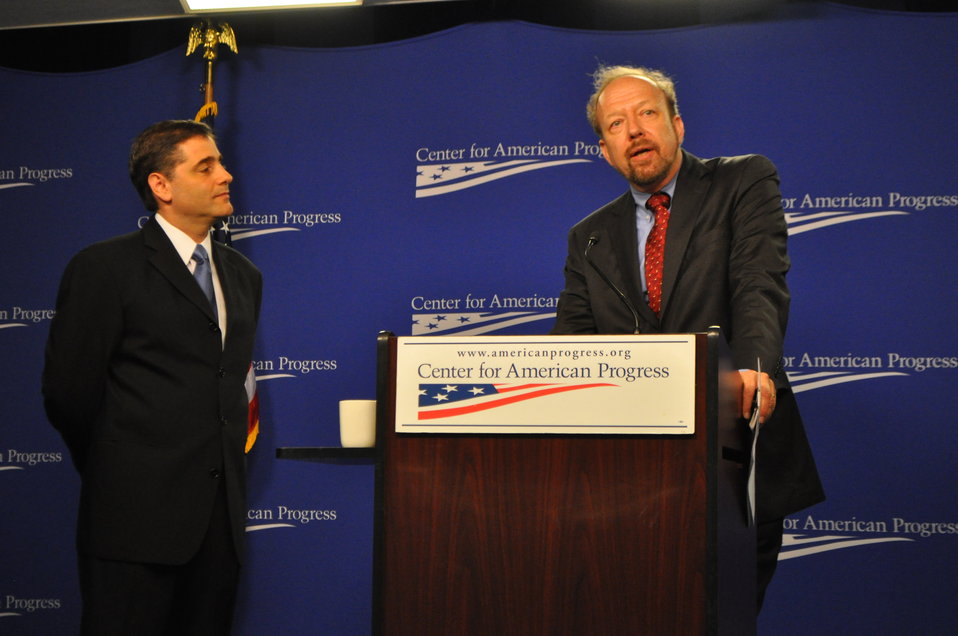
'Cramming' and Mystery Fees Event

Julius Genachowski, Chairman of Federal Communications Commission and Joel Gurin Chief, Consumer and Governmental Affairs Bureau of Federal Communications Commission